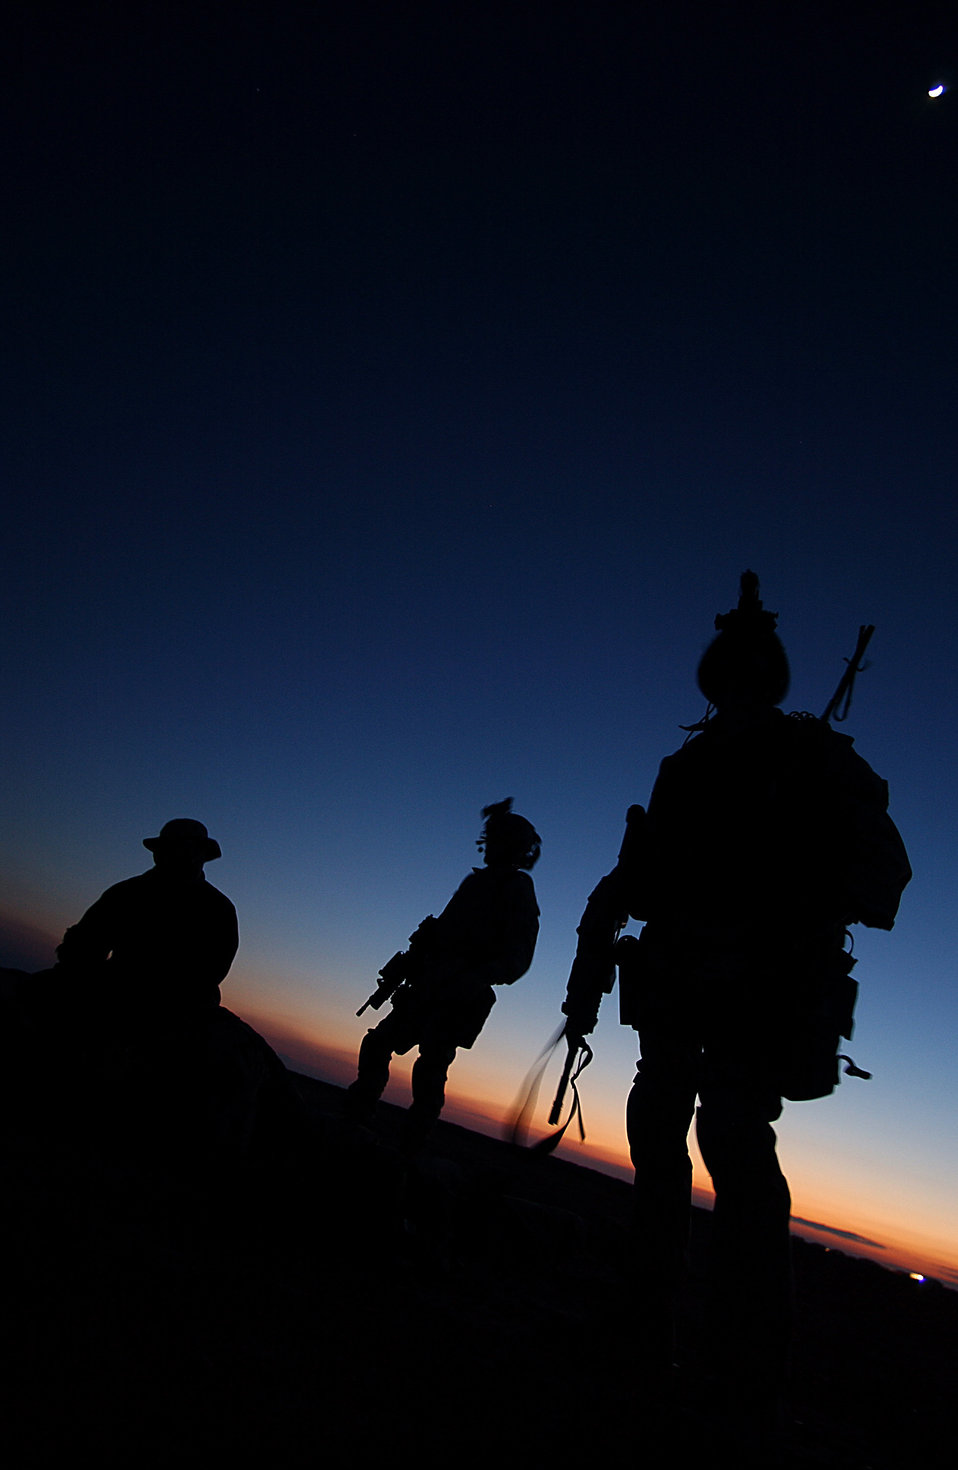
Saddle up

OPERATION ENDURING FREEDOM -- Air Force combat controllers gear-up for a night fire exercise at a forward-deployed location supporting Operation Enduring Freedom. Combat controllers conduct and support special operations missions under clandestine, covert or low visibility conditions.